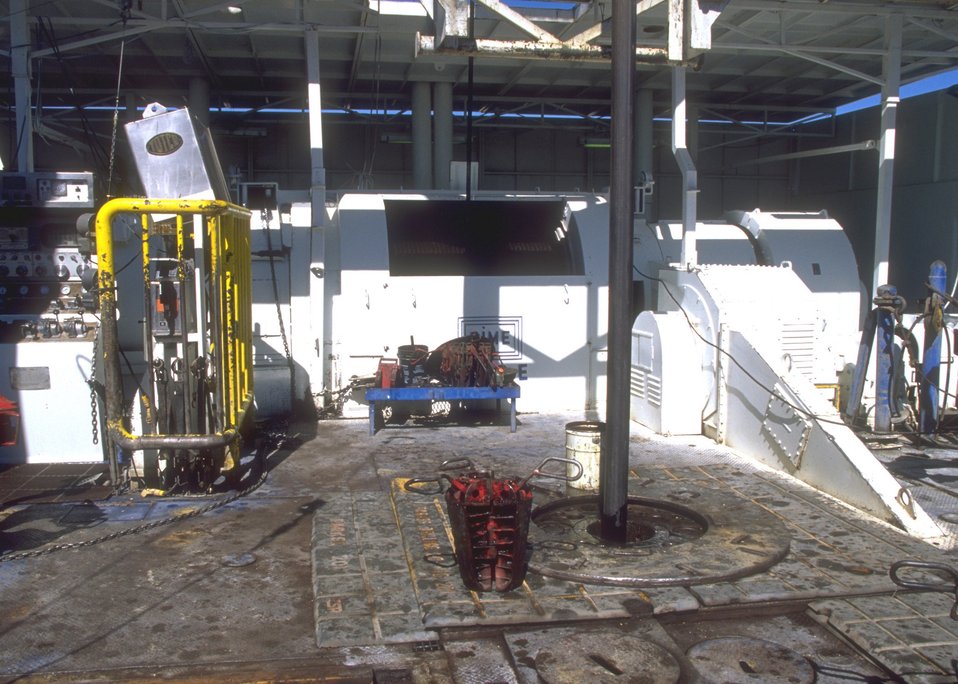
View of drill hole and attendant facilities on the Burlington Northern deep well rig, Casper Field Office.